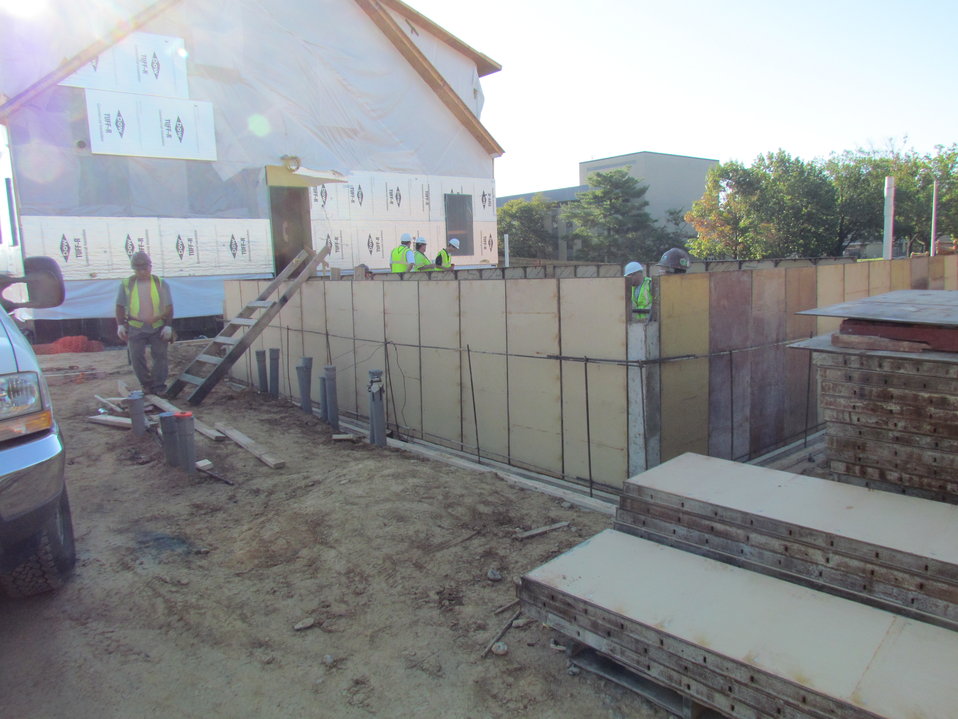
Net-Zero Energy Residential Test Facility - Photo showing placement of concrete forms for garage stem wall.